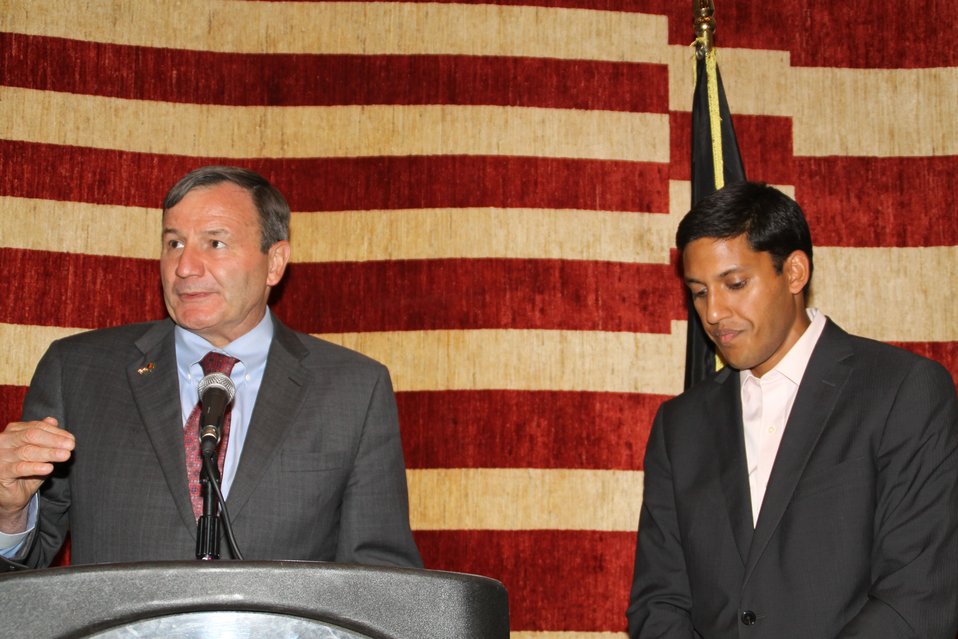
US Embassy Town Hall July 21, 2010